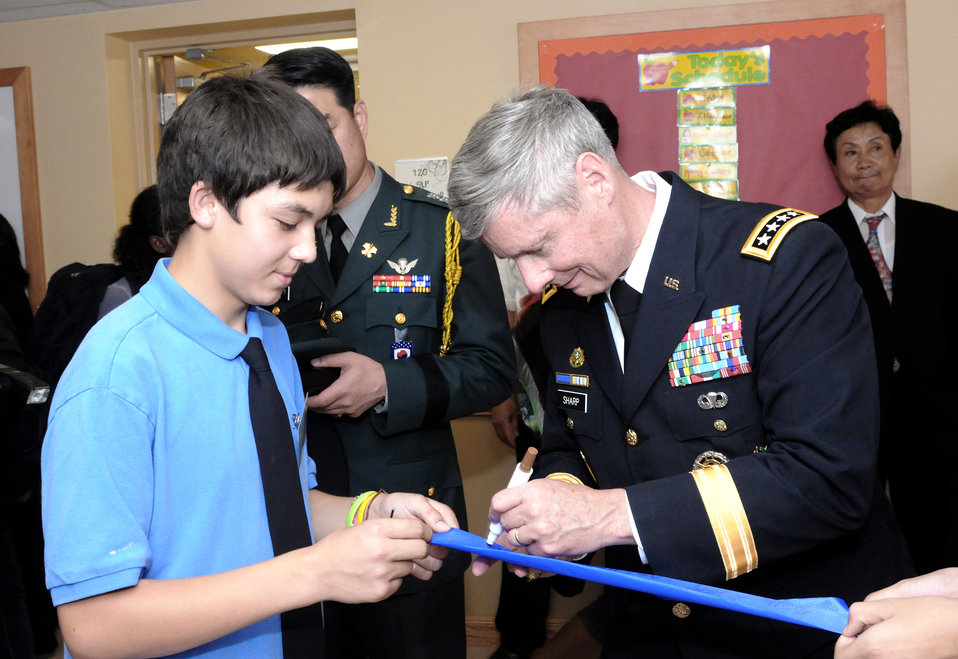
Camp Casey

Army Gen. Walter L. Sharp chats with a student as he signs the ribbon he cut during the official opening of the new Casey Elementary School Sept. 15, 2010, at Camp Casey, South Korea. General Sharp is the commander of U.S. Forces Korea.